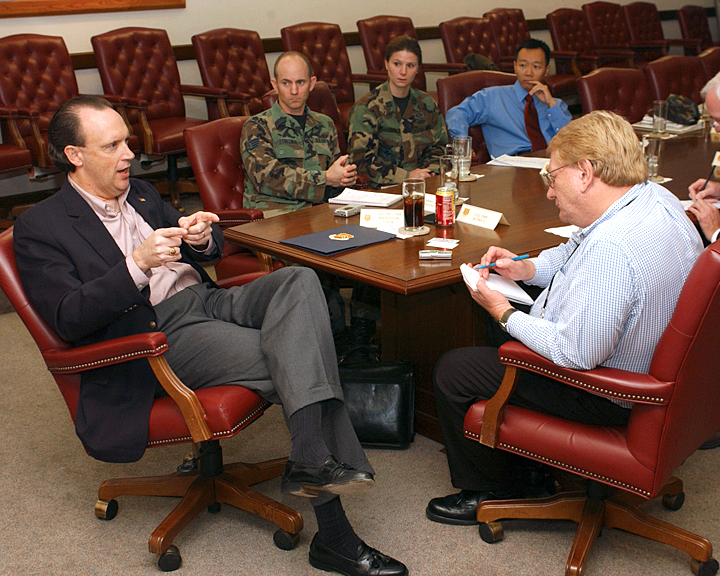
Luke shows off energy conservation program

William C. Anderson, Air Force assistant secretary for installations, environment and logistics, speaks to members of the media in Phoenix, Ariz., Oct. 26, after receiving a mission briefing at Luke Air Force Base, Ariz.